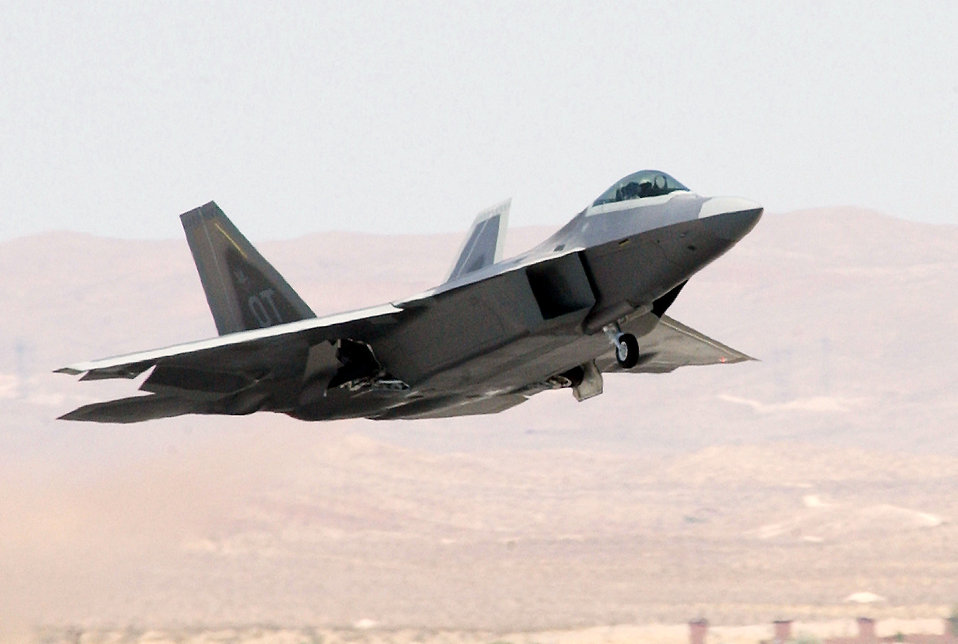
Raptor take off

NELLIS AIR FORCE BASE, Nev. -- An F/A-22 Raptor makes a pass over the flightline here July 9. This is the fourth Raptor to arrive from the factory. Eventually, 17 of the next-generation stealth fighters will be assigned here.